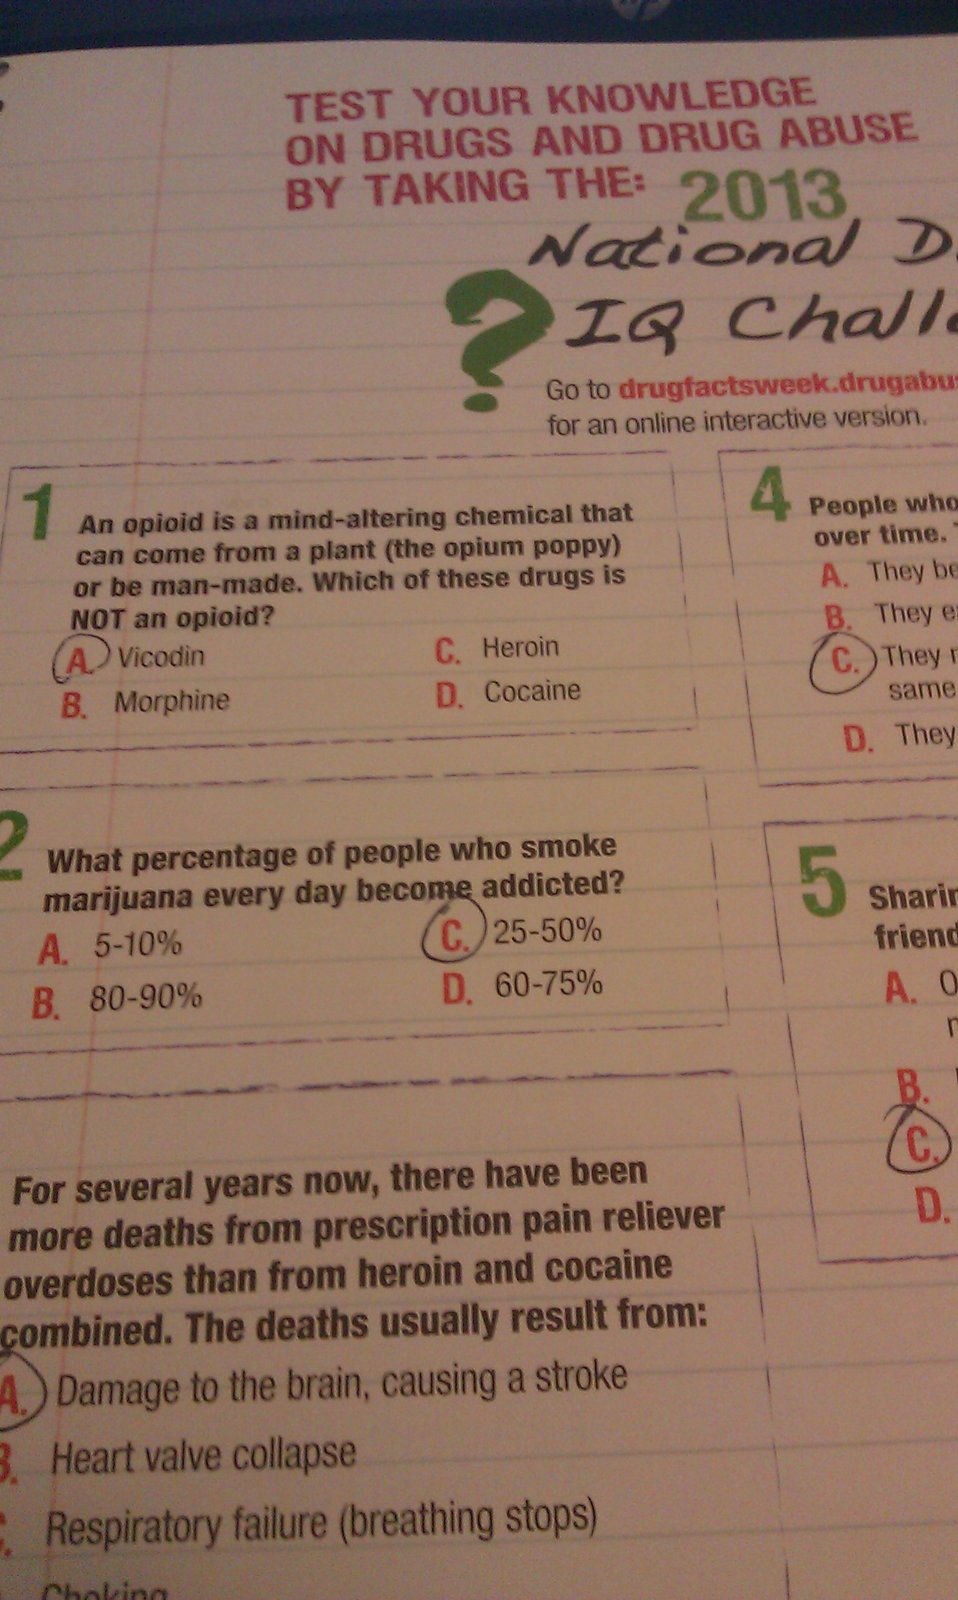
Tennessee's IQ Challenge NDFW 2013

Kingston,Tenn. Roane County Anti-Drug Coalition, 2013 National Drug Facts Week activities.